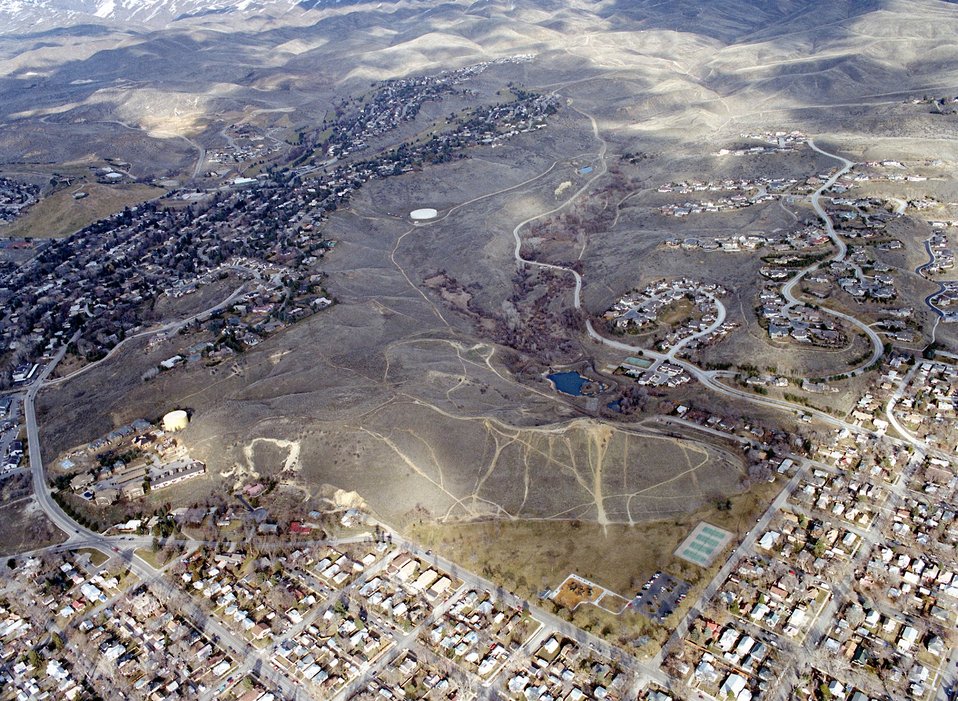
Recreation on the Boise Front Foothills Aerial Camels Back Park Four Rivers Field Office LSRD Lower Snake River District